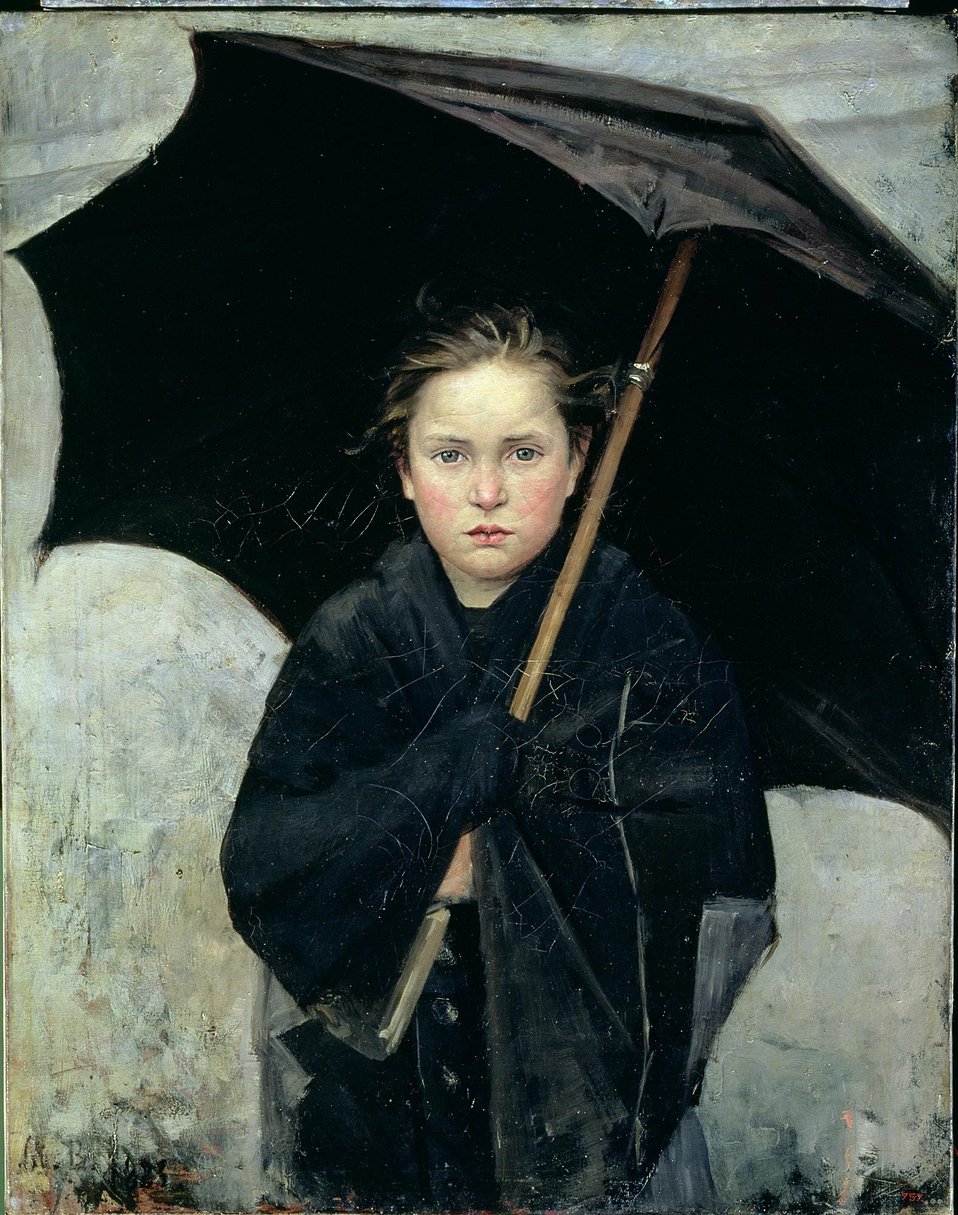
Мария Константиновна Башкирцева - Зонтик